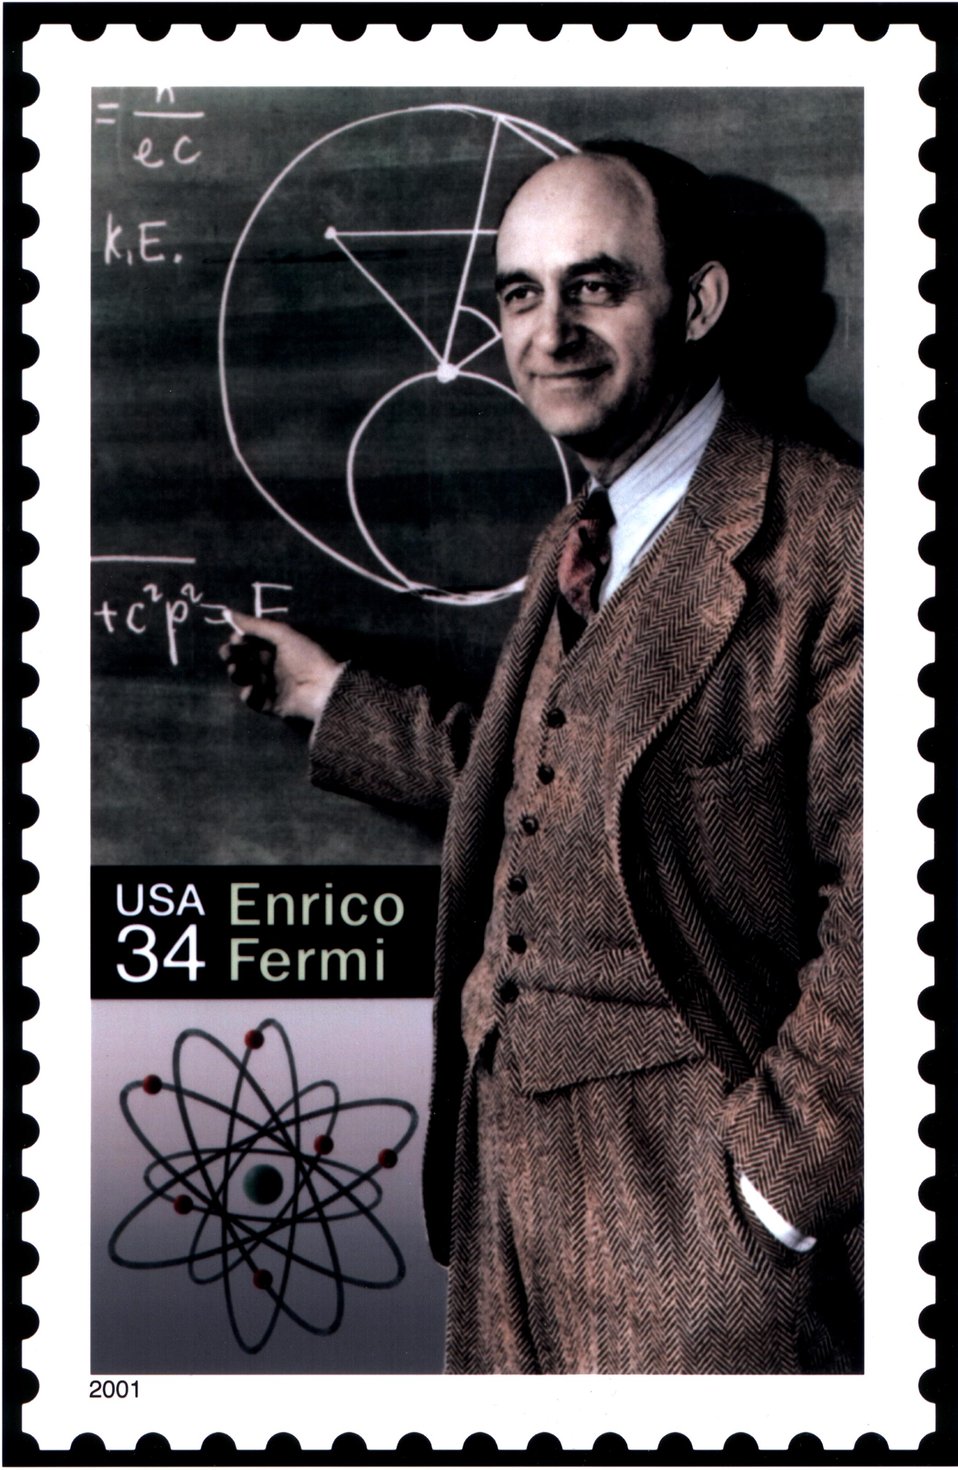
POSTAGE STAMP ISSUED SEPTEMBER 29, 2001 TO COMMEMORATE ENRICO FERMI ON THE 100TH ANNIVERSARY OF HIS BIRTH.

THE FERMI NATIONAL ACCELERATOR LAB IS NAMED FOR THE NOTED PHYSICIST, ENRICO FERMI WHO WON THE 1938 NOBEL PRIZE IN PHYSICS FOR THE DISCOVERY OF NUCLEAR REACTIONS BROUGHT ABOUT BY SLOW NEUTRONS. IN 1942, HE DIRECTED THE FIRST CONTROLLED, SELF-SUSTAINING MAN-MADE NUCLEAR CHAIN REACTION WITH THE MANHATTAN PROJECT. THE PHOTOGRAPH SHOWN ON THE STAMP, WHICH WAS TAKEN IN 1948, SHOWS A MODEL OF THE CARBON ATOM. GRAPHITE, A FORM OF CARBON, WAS USED TO SLOW DOWN THE NEUTRONS IN THE FIRST NUCLEAR REACTOR.